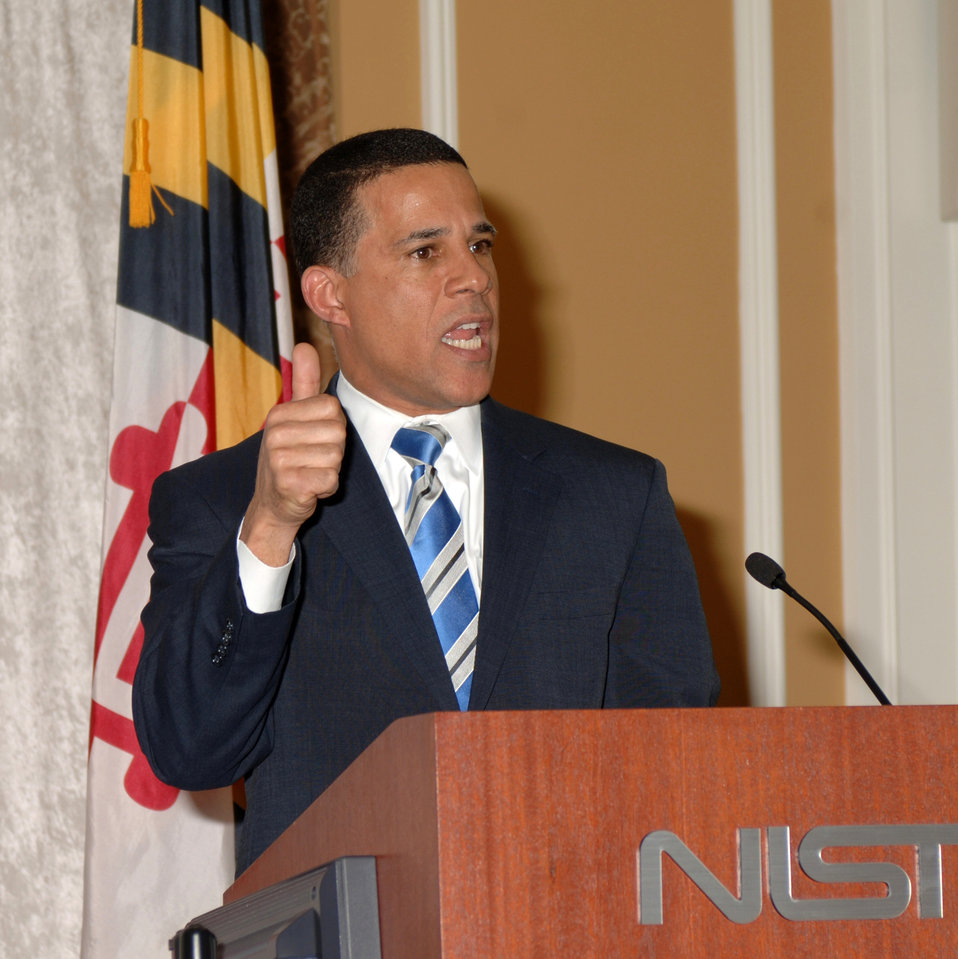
National Cybersecurity Center of Excellence MOU Signing

Maryland Lieutenant Governor Anthony G. Brown speaks at new National Cybersecurity Center of Excellence MOU Signing at NIST.